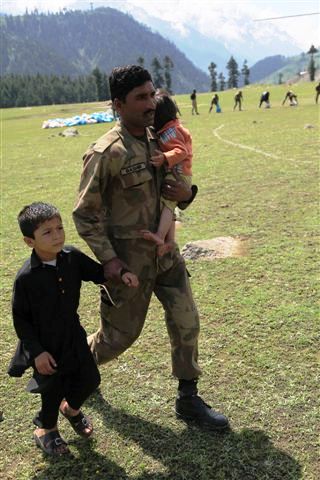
A member of the Pakistan military carries a baby while escorting a young boy onto the back of a U.S. Army Chinook (CH-47) helicopter during the evacuation of civilians as part of the disaster relief effort to help flood victims from Khyber Pakhtunkhwa Province (formerly North West Frontier Province), Pakistan, on August 5, 2010.